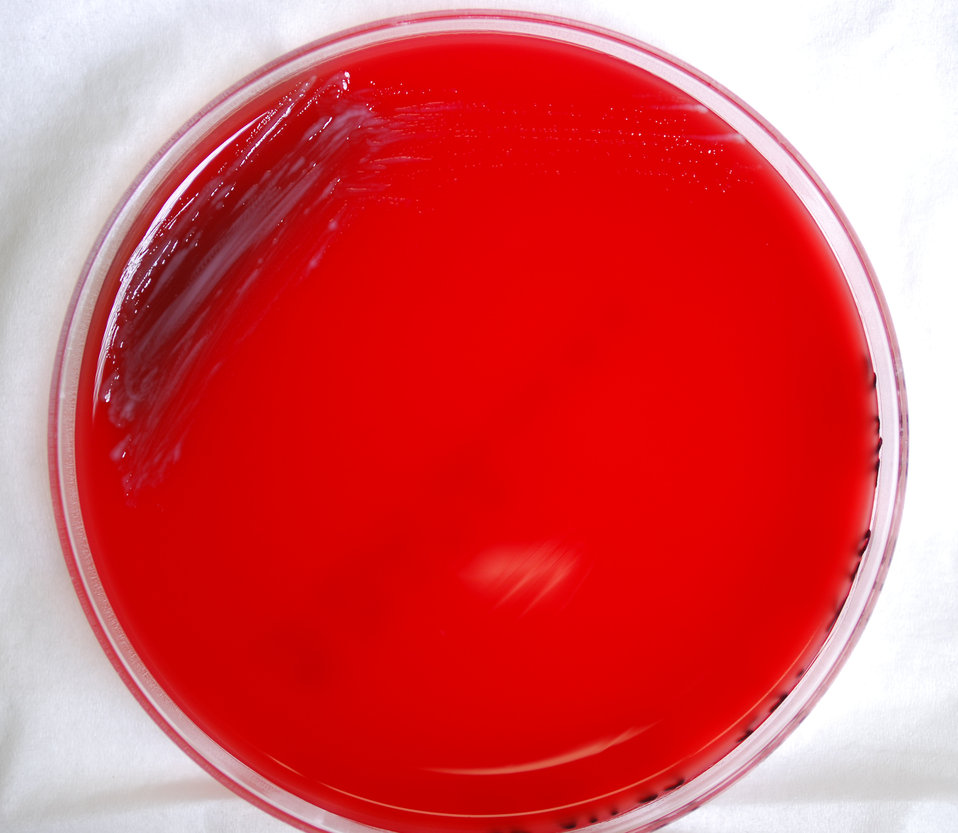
This photograph depicts the very minimal colonial morphology displayed by Gram-negative Yersinia pestis bacteria, which was grown on a medium of sheep's blood agar (SBA), for a 24 hour time period, at a temperature of 37�C. For a closer view of these bacterial colonies, see PHIL 12245.